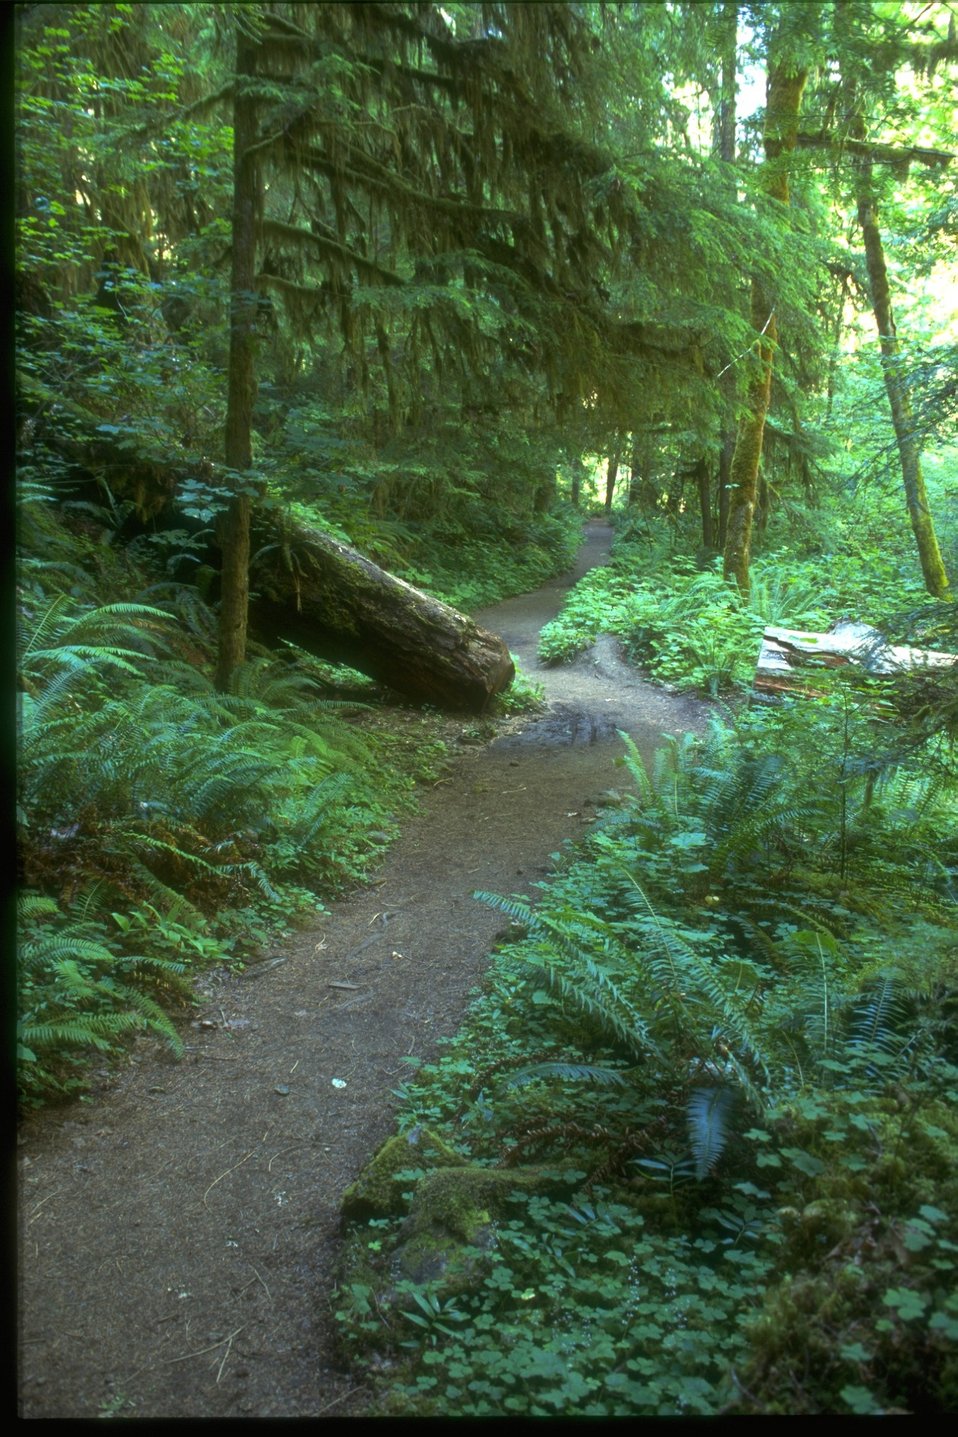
Wolf Creek Falls Trail.